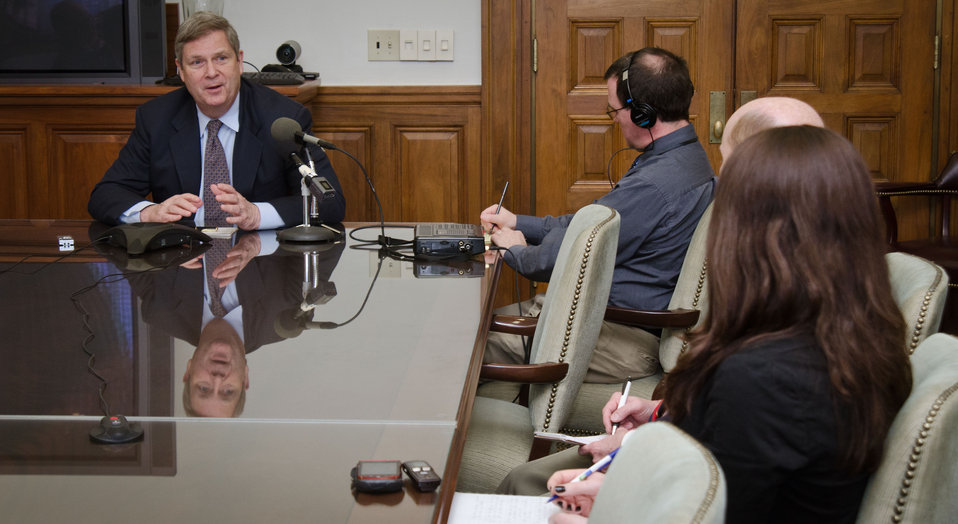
Agriculture Secretary Tom Vilsack (left), responds to a question from Agri-Pulse reporter Sarah Gonzalez (right) during a briefing to in-house reporters and media conference call to review the Agriculture FY2013 budget in Washington, D.C. on Monday, February 13, 2012.